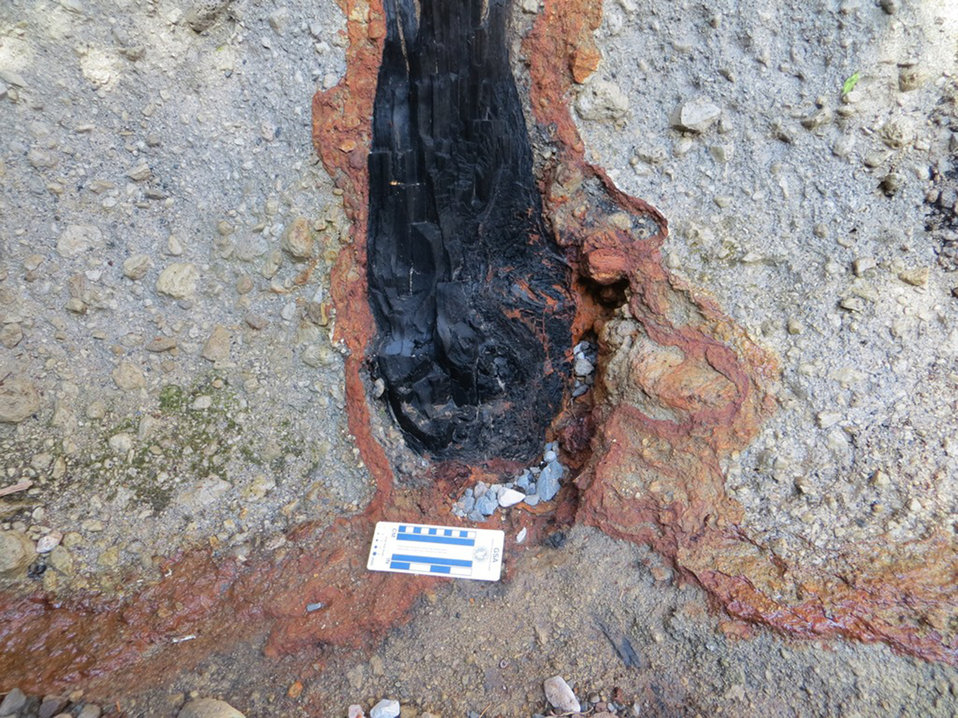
kruzoff-tree-base

This blackened area is the base of a 13,180-year-old Sitka spruce tree buried by an eruption from Mount Edgecumbe volcano about 13,200 years ago on Kruzof Island near Sitka, Alaska Sep. 10, 2013.